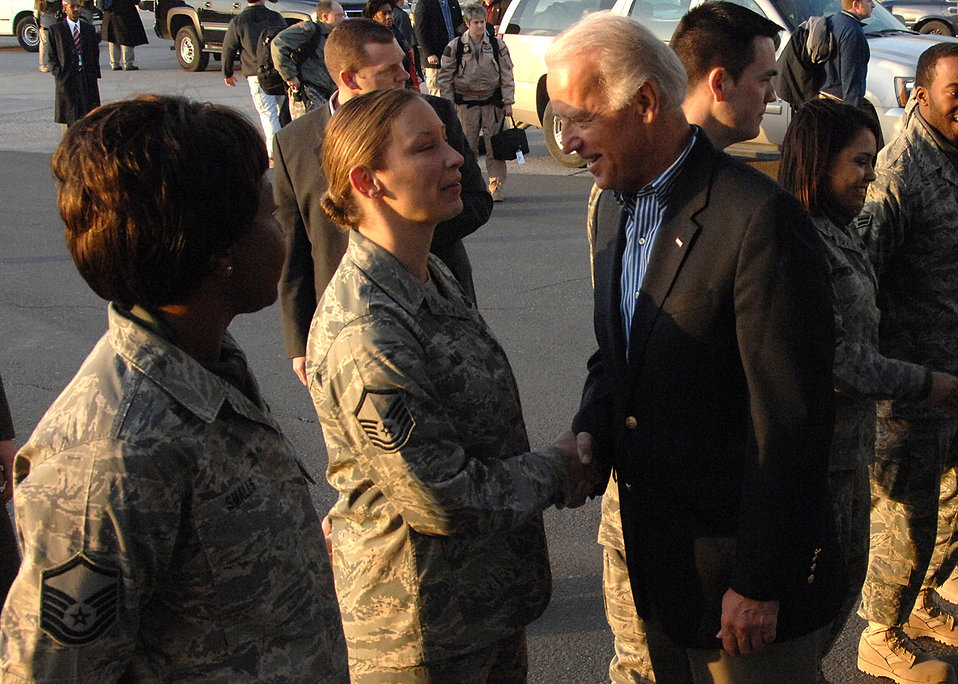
Vice president-elect meets Airmen in Southwest Asia

Airmen from the 387th Air Expeditionary Group meet Vice President-elect Joe Biden Jan. 12 at an air base in Southwest Asia. Vice President-elect Biden is headed into Iraq as part of his trip to the region.